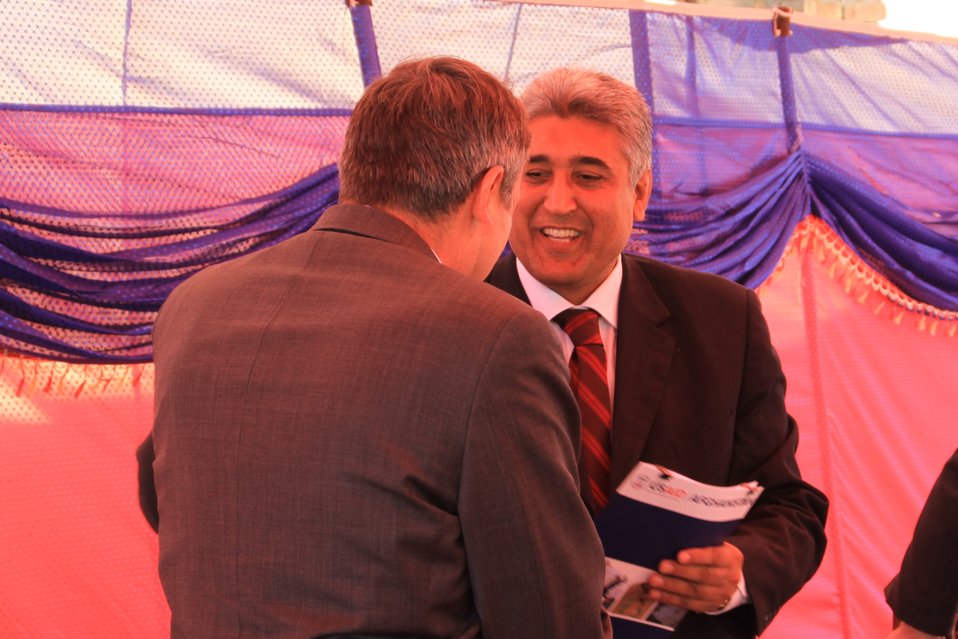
AVIPA Plus Wheat Seed Distribution 101005

US Ambassador Karl Eikenberry and USAID Acting Mission Director Kevin Brownawell joined the Minister of Agriculture, Irrigation and Livestock, H.E. Minister Mohammed Rahimi in signing a Memorandum of Understanding and distributing vouchers to area farmers for wheat and fertilizer.